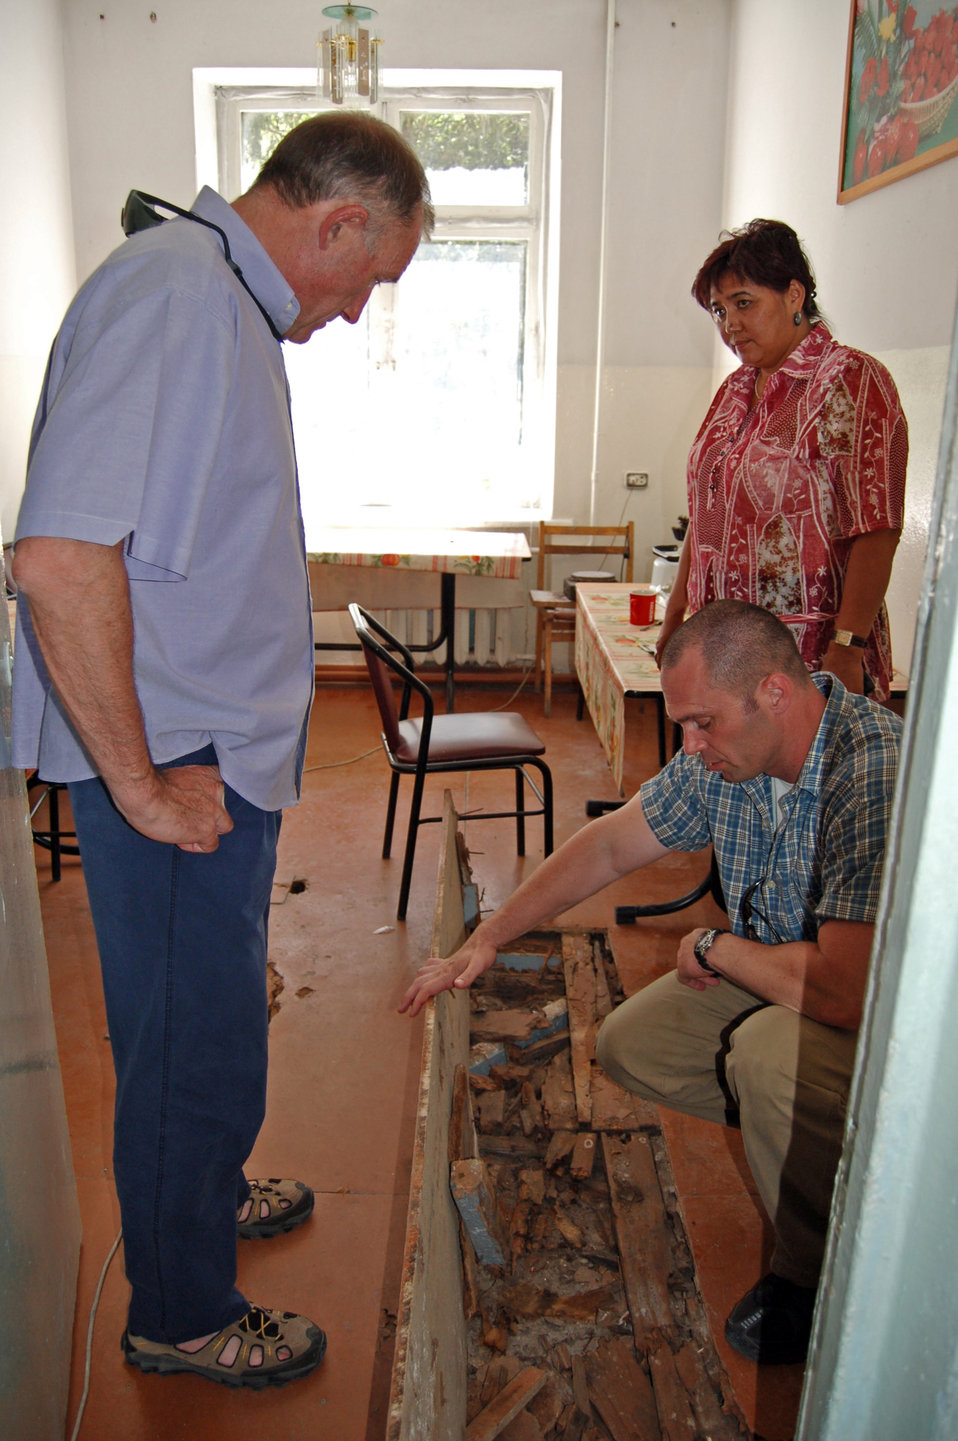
Manas helpers receive a little help themselves

Senior Master Sgt. Tim Cook shows Royal Air Force Squadron Leader Roger Newton the poor condition of the floors at the school Aug. 4 in Bishkek, Kyrgyzstan. Manas Air Base Outreach Society volunteers lend their personal time renovating community facilities or visiting with the elderly or residents of orphanages and medical facilities for children. Sergeant Cook is the leader for the Deaf School Focus Group for the Manas Air Base Outreach Society.